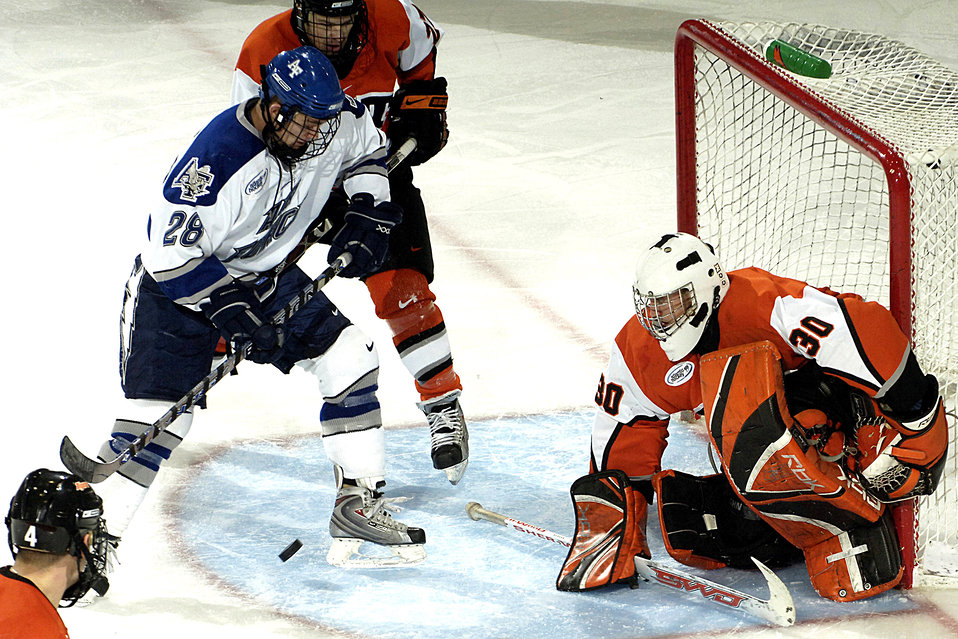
Falcons defeaft Rochester Institute of Technology

U.S. Air Force Academy Falcon senior forward Josh Schaffer takes a shot as the Air Force defeated Rochester Institute of Technology, 5-2, in an Atlantic Hockey Association game Jan. 11 in the Cadet Ice Arena at Colorado Springs, Colo.